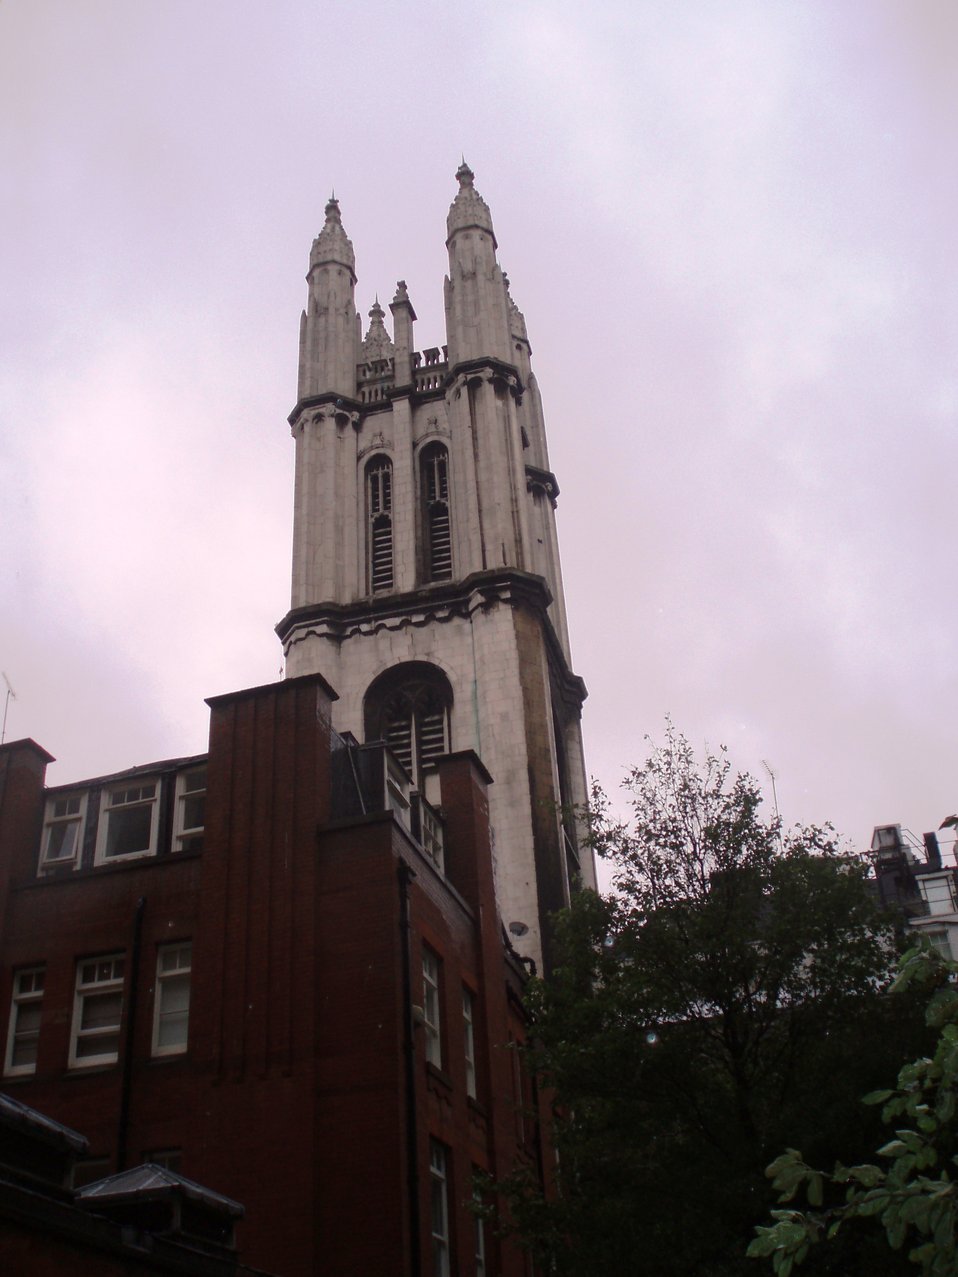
St Michael, Cornhill